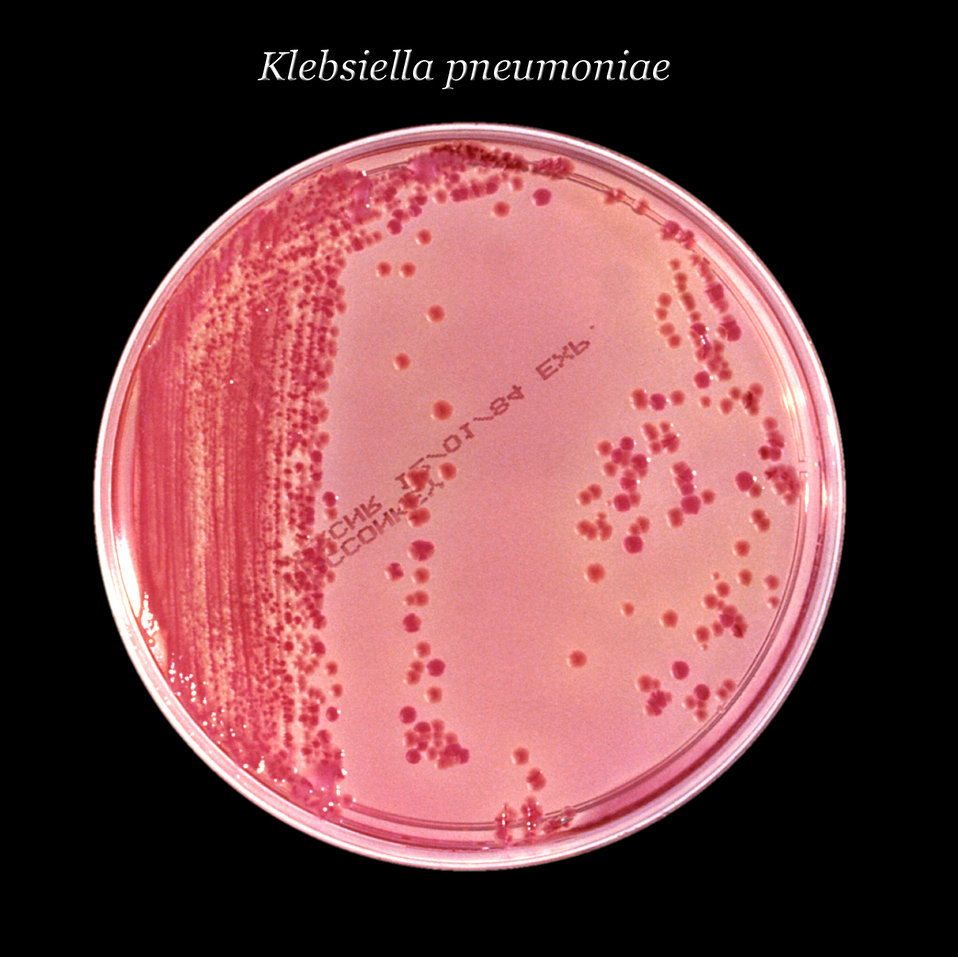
After 24 hours, this inoculated MacConkey agar culture plate cultivated colonial growth of Gram-negative, small rod-shaped and facultatively anaerobic Klebsiella pneumoniae bacteria.